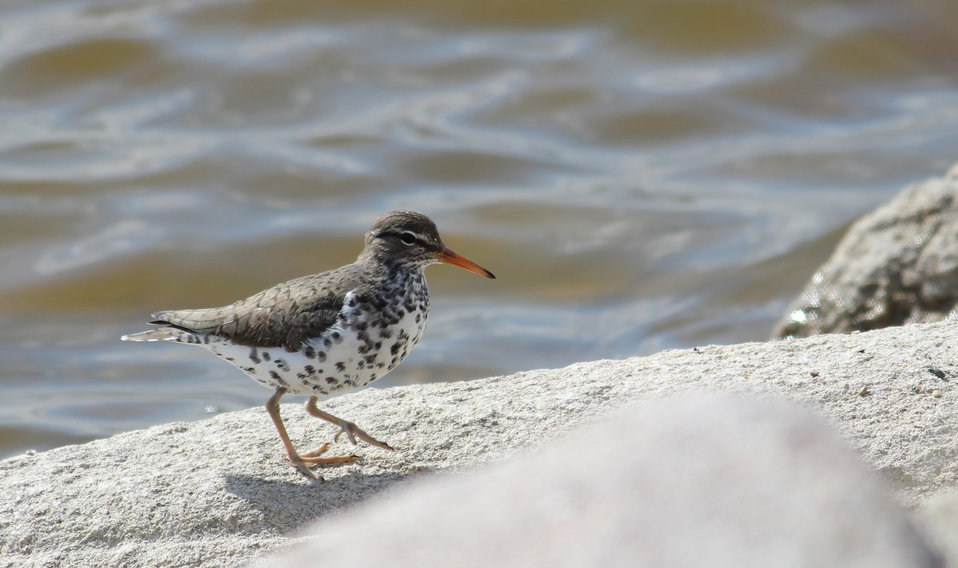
Spotted Sandpiper

This widely-distributed shorebird is fairly easy to identify during the summer when its breast is dotted with bold spots. However, in the winter, the breast pales out to solid white. Spotted sandpipers also display role reversal with the female defending the territory and the male doing most of the work to raise the young. Photo taken at Schneider Waterfowl Production Area, Dickey County, North Dakota.